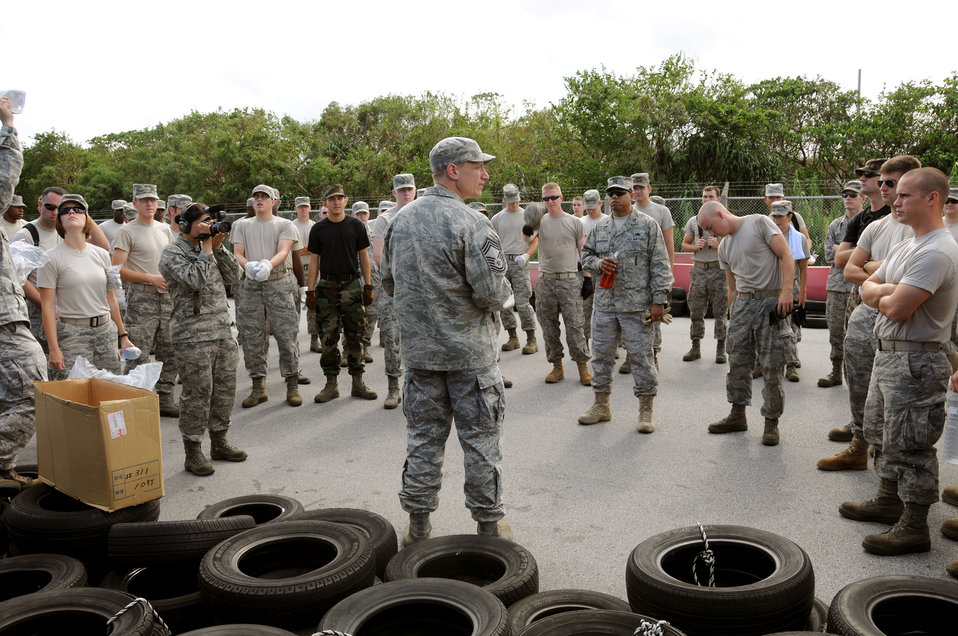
Airmen clean up after typhoon

Volunteer Airmen from Kadena Air Base, Japan, receive a safety briefing at the Okuma Recreation Area Sep. 2, 2010, before starting to clean up the debris left when Typhoon Kompasu struck Okinawa Aug. 31.